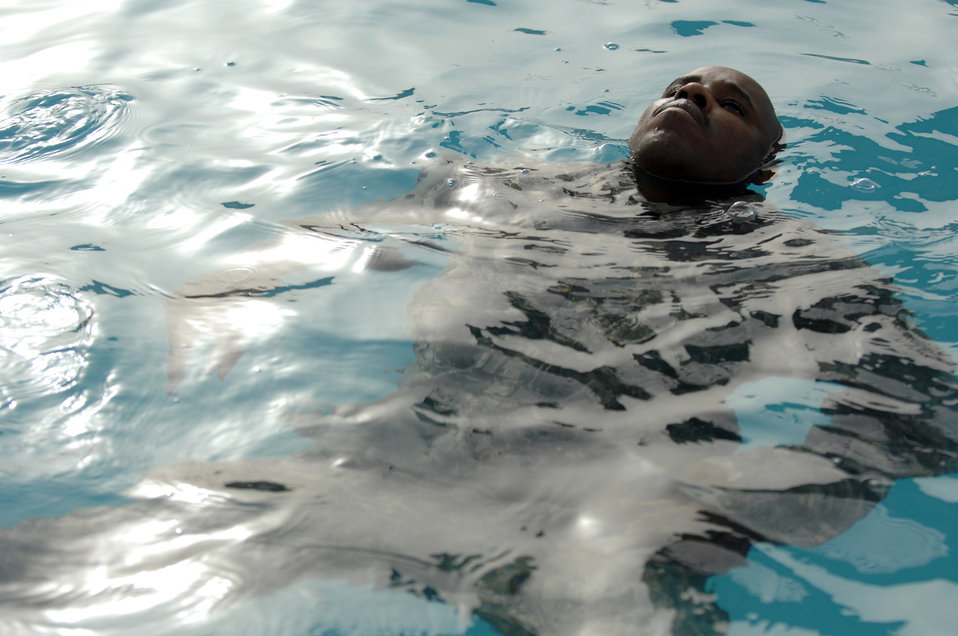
All Wet

Tech. Sgt. Gerald Davis treads water during water skills training Joint Base Balad, Iraq, July 8. His ability to function in water is essential to the success of water operations. Sergeant Davis is a 332nd Expeditionary Civil Engineer Squadron explosive ordnance disposal technician.